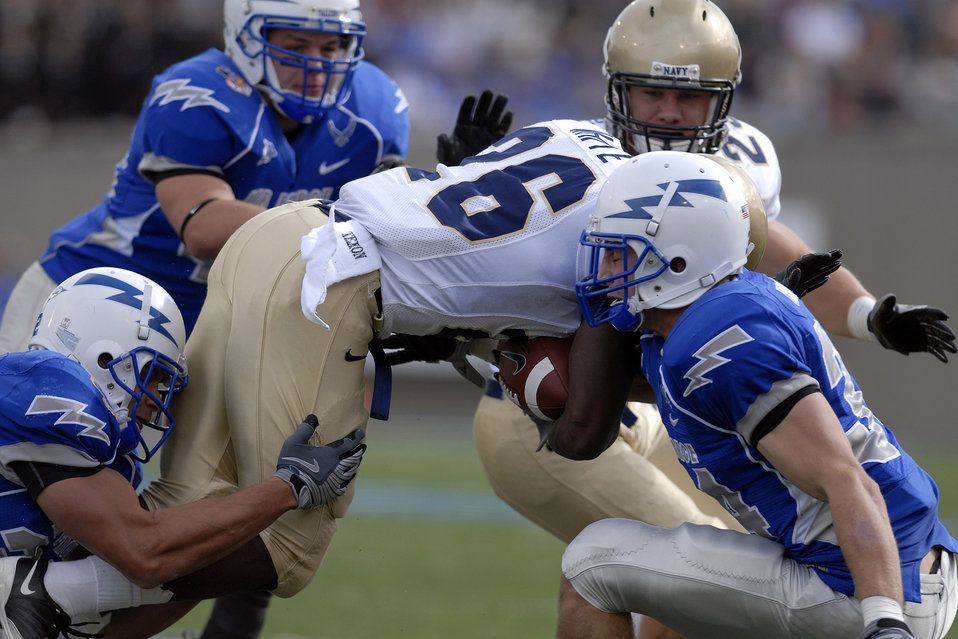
Football: Navy holds off Falcons

U.S. Air Force Academy safety Chris Thomas strips the ball as Navy defeated the Falcons 33-27 at the Academy in Colorado Oct. 4.